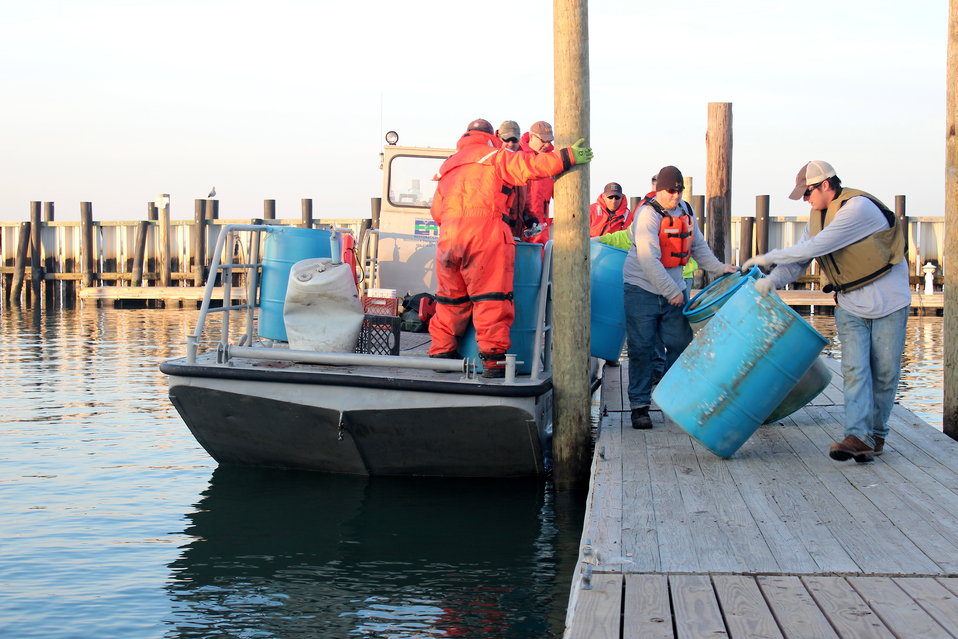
December 3, 2012 – Crews return to dock with collected drums and containers

On that day alone, three boats returned with 22 drums and barrels, and over 30 small containers of various fluids and oils. Crews reported that a great deal of general trash and debris remains along the islands and shoreline.